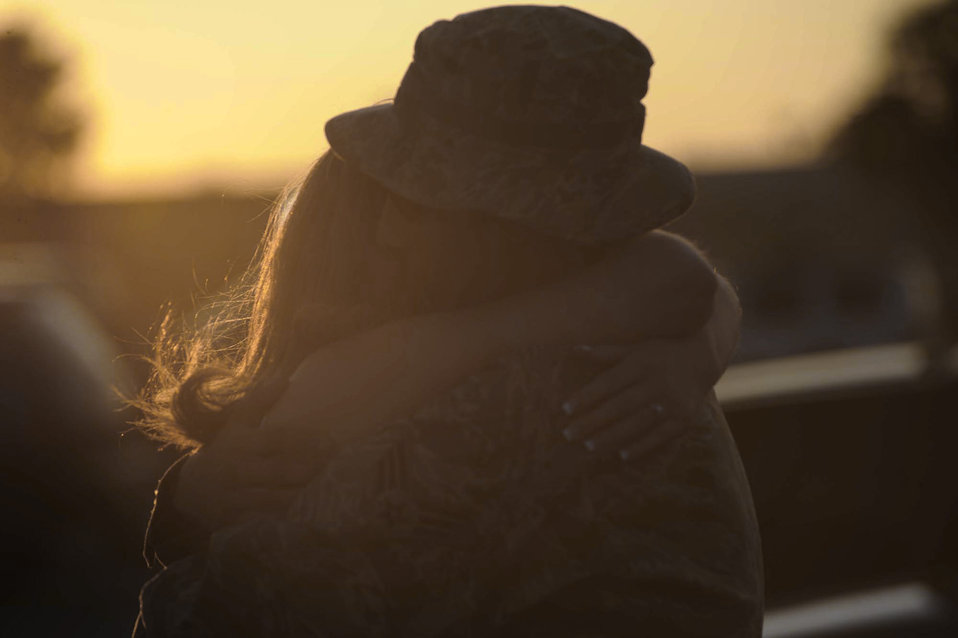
Airmen deploy to Southwest Asia

Senior Airman Spencer Hensinger hugs his fiance before deploying from Ellsworth Air Force Base, S.D. Airmen in various roles deployed in support of operations in Southwest Asia. Airmen Hensinger is structural maintenance journeyman with the 28th Aircraft Maintenance Squadron.